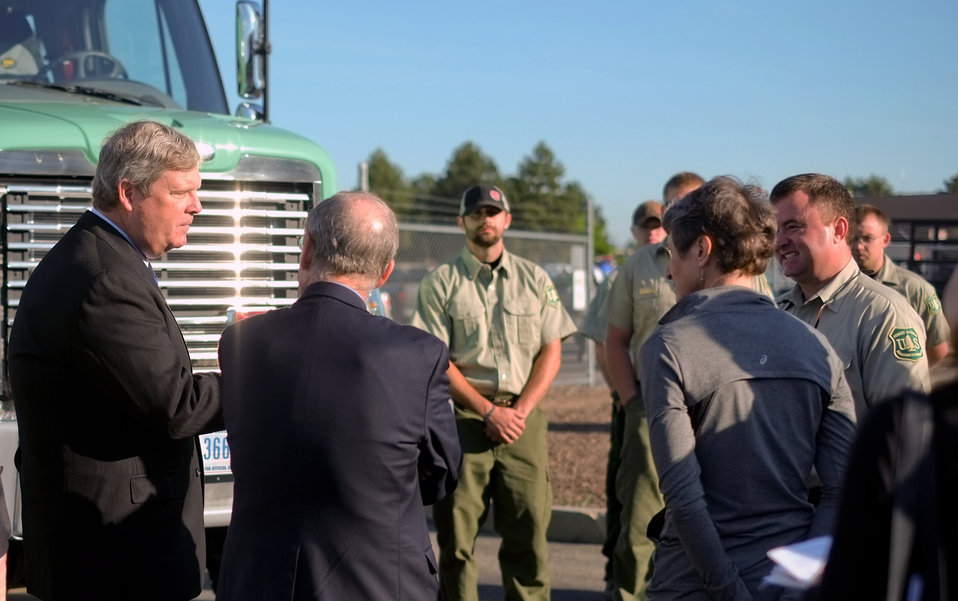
Agriculture Secretary Tom Vilsack and Interior Secretary Sally Jewell speak to employees at the National Interagency Fire Center (NIFC) in Boise, ID on Monday, May 13, 2013. Agriculture Secretary Vilsack and Interior Secretary Jewell provided an outlook for the upcoming fire season and outlined the federal government’s efforts to ensure collaboration in protecting Americans from wildfire.